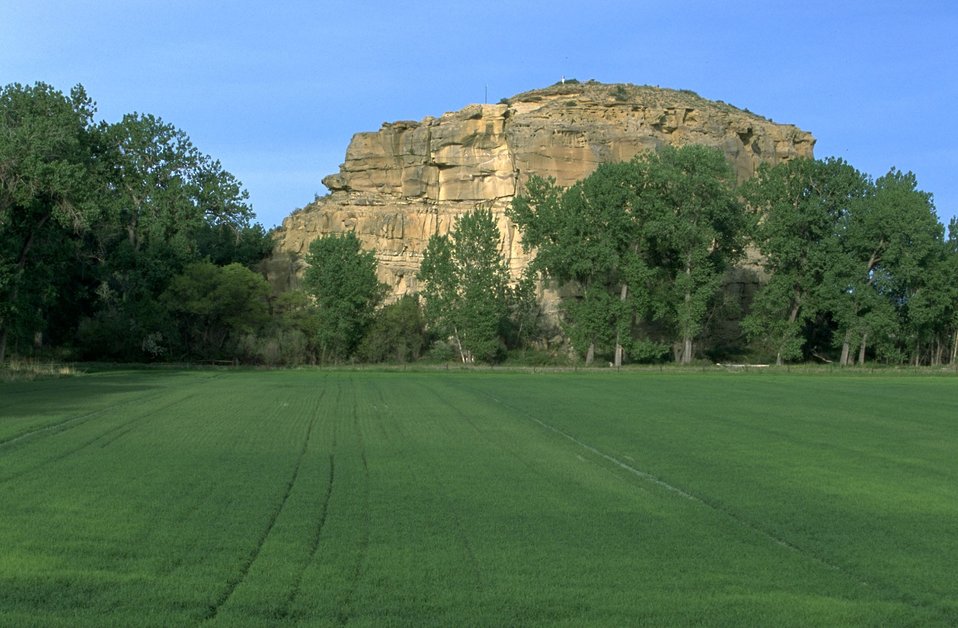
View of Pompeys Pillar from the west across private agricultural property